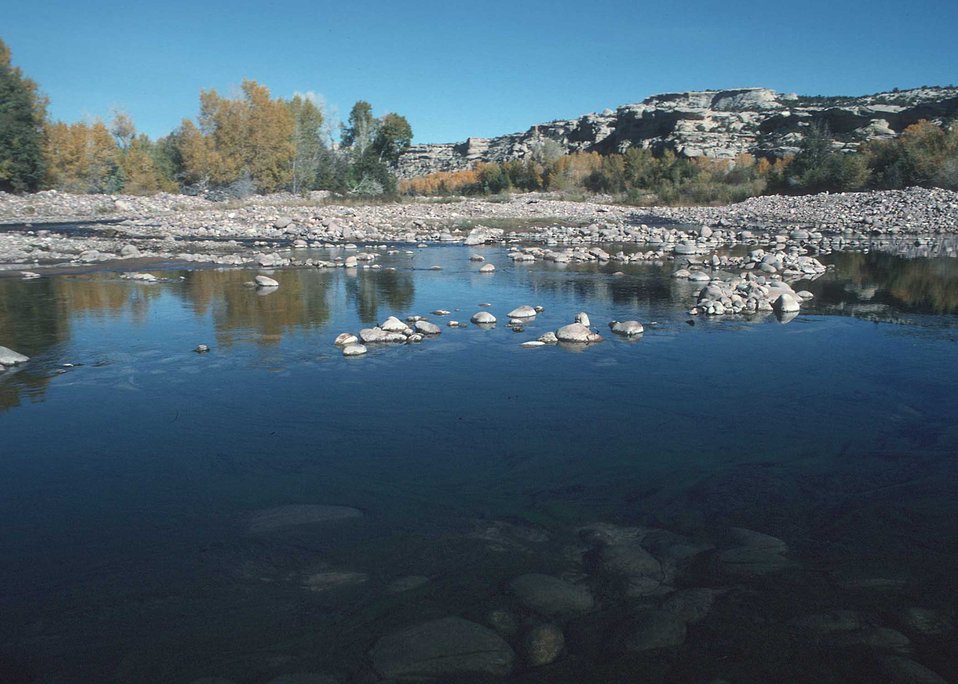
Water pools in a quiet stream in Duchesne County, Utah.